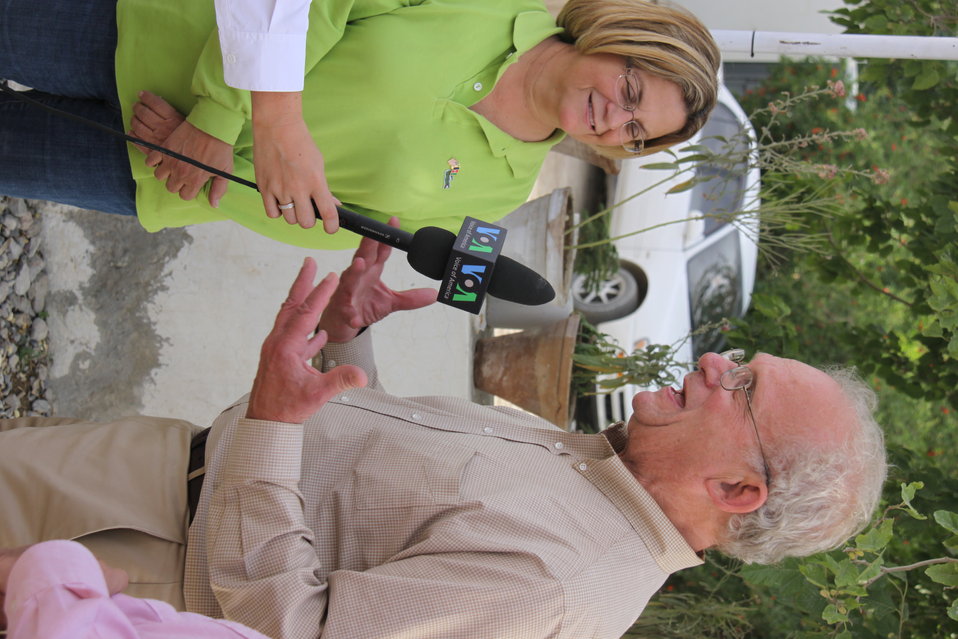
Meeting with Local Leaders in Kandahar